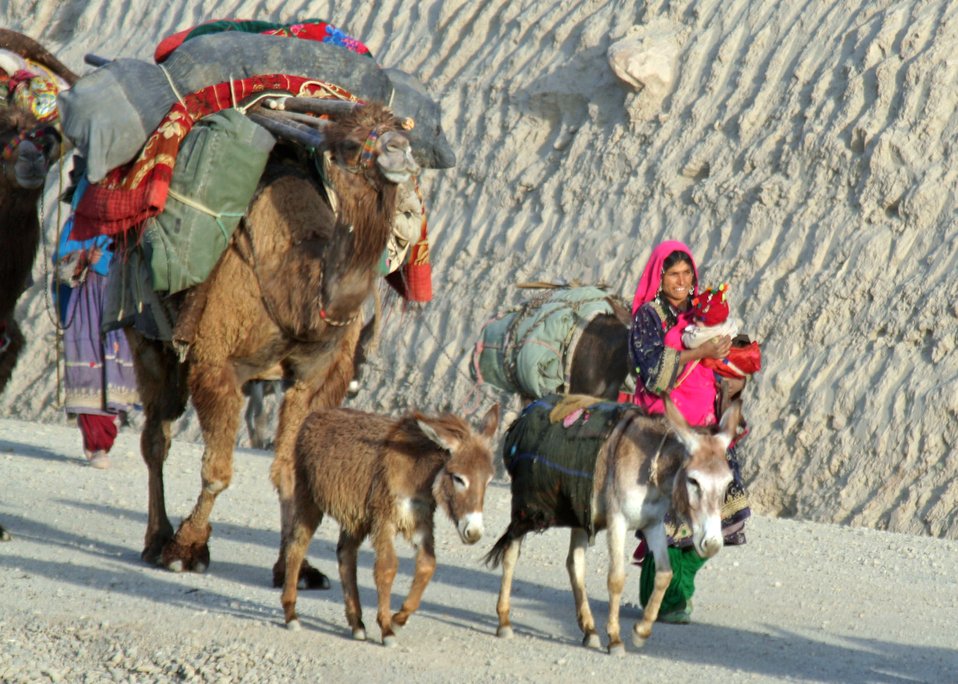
Medics make house calls on Afghan nomads

The nomadic Kuchi people migrate through the Panjshir Valley in Afghanistan, on Wednesday, May 17, 2006. Part of a Medical Civic Action Program, Provincial Reconstruction Team members provide treatment for Kuchi families as they move their sheep, goats, donkeys, camels and cattle to the high country for the summer.